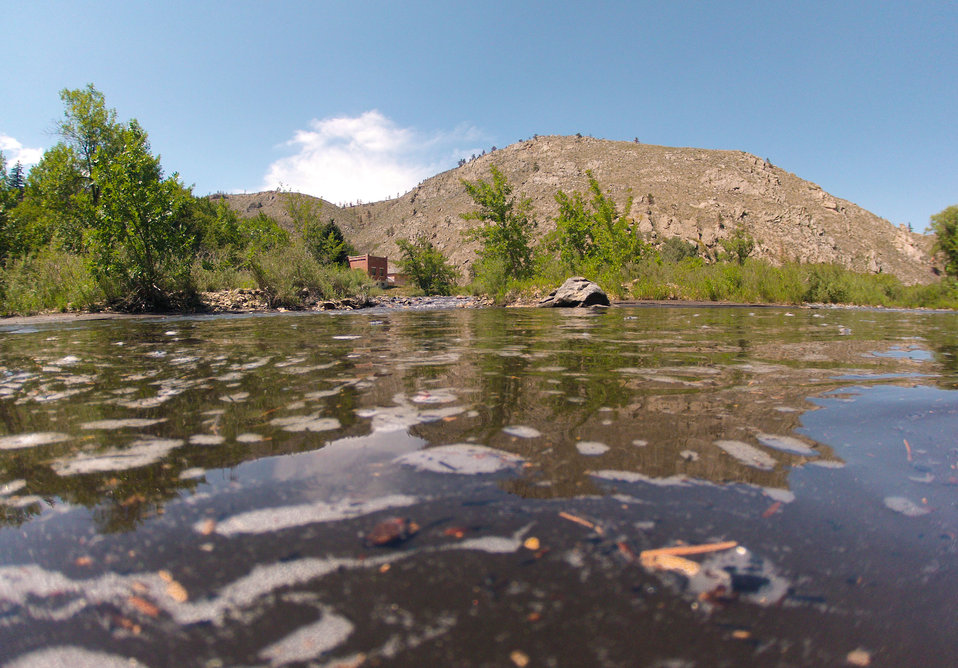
A confluence of two tributaries, the Cache la Poudre and the North Fork of the Cache la Poudre, near Seaman Reservoir, 60 miles north of Denver, Colorado on Friday, July 20, 2012, have been transformed from clear mountain waters to a nearly black water, heavily laden with ash, silt, and burnt debris that was recently washed down mountainsides by thunderstorms. The mountainsides were burned by the Hewlett Gulch Fire (May 14, 2012), in the Poudre Canyon area. At its peak more than 400 firefighters were battling fires pushed by 50 mph winds. When the last embers were cooled, more than 12-square miles lay blacked at a cost of approximately 3.2 million dollars. The aerial distribution of straw has successfully kept nearby Seaman Reservoir clean for the drinking water of the City of Greeley. Forest Service lands receive straw, while private and other lands receive a seed mix and straw to promote ground cover plant growth on ash-covered lands. In total, 1,800 tons of straw will be applied during the 14-day operation. One quarter of the cost was paid by the City of Greeley and the U.S. Department of Agriculture funded the remainder.